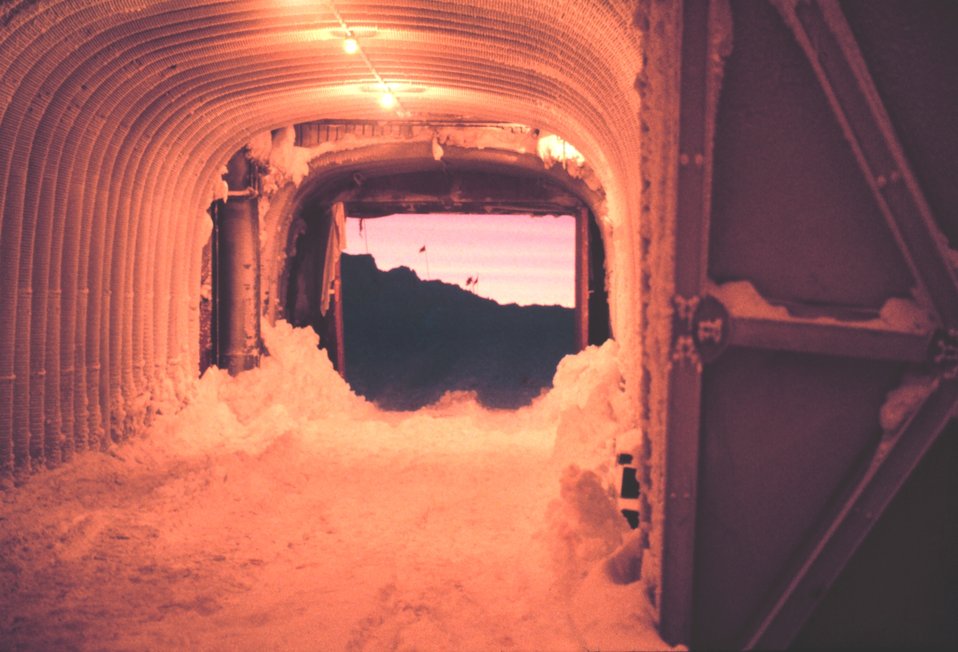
Antarctic sunrise as seen through the entrance tunnel